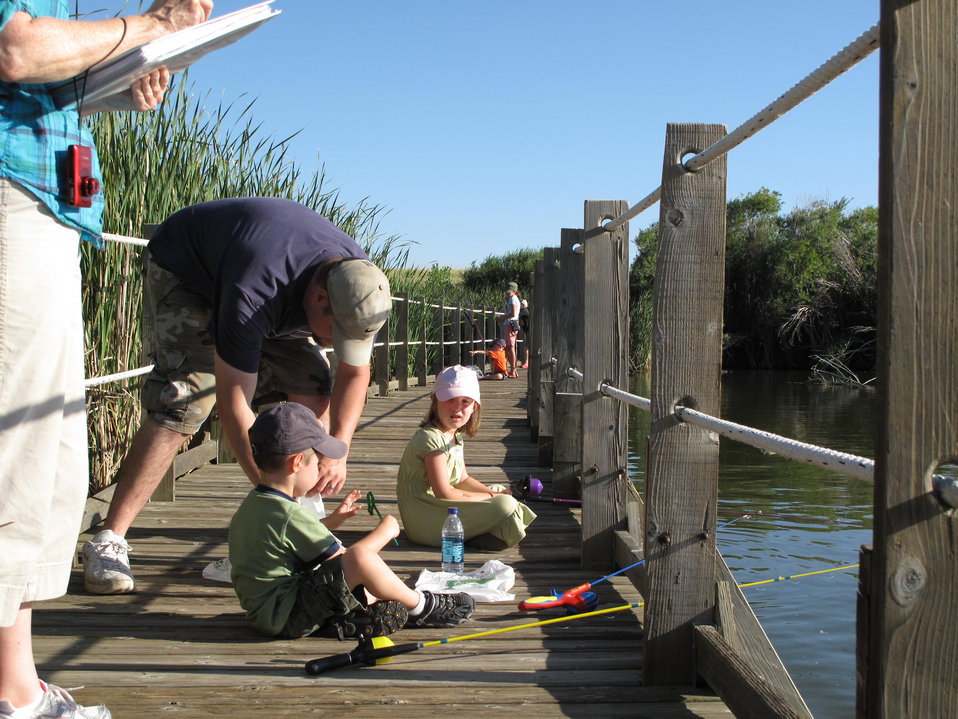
Fishing

Most of the parents attended to help the children with bait and reeling in the fish.